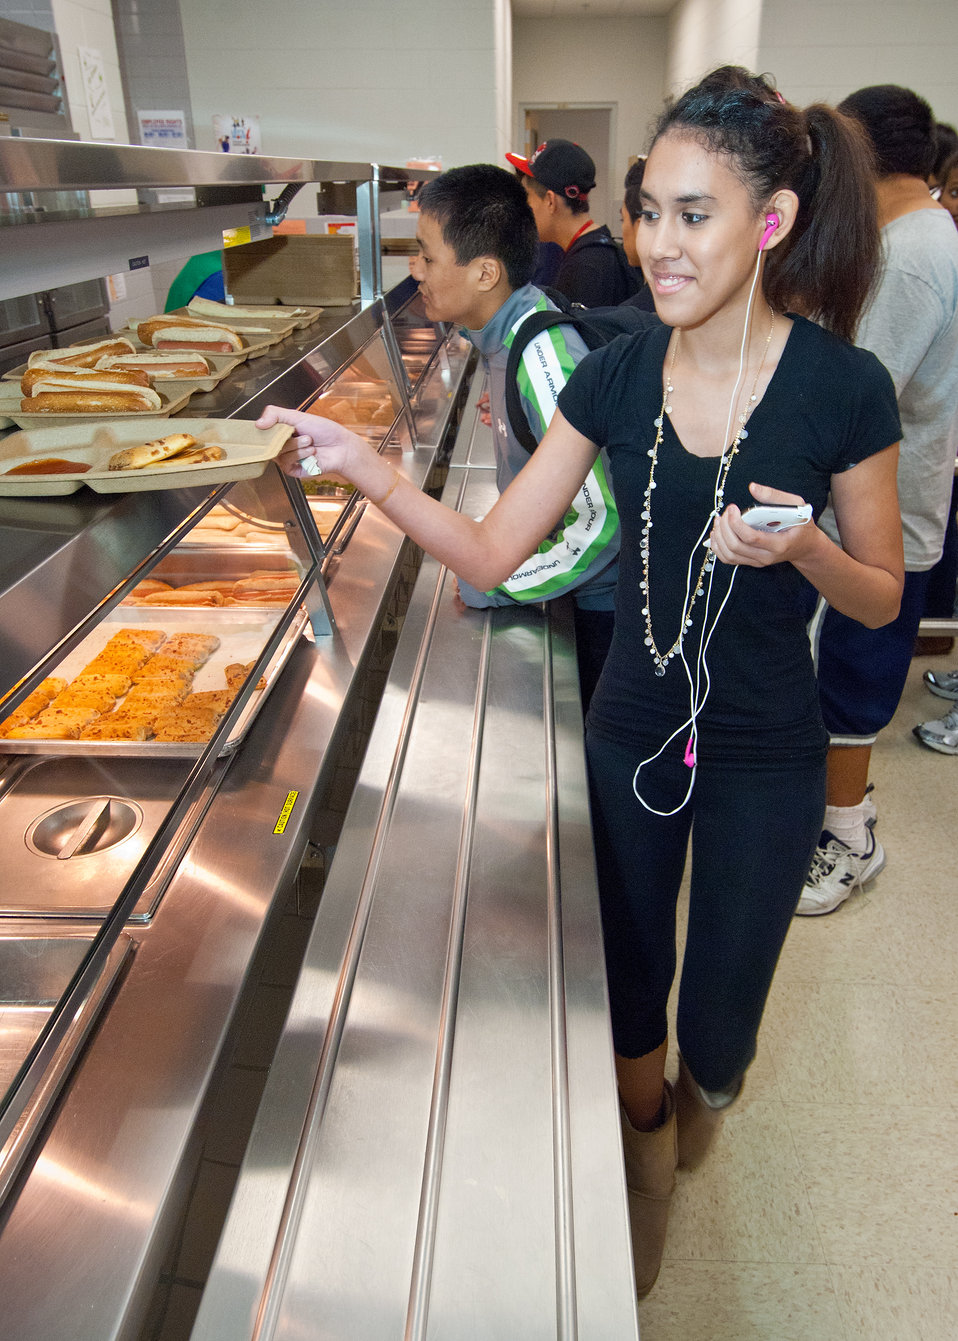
A student with the ubiquitous digital music headphones students selects her lunch at Washington-Lee High School, on Wednesday, October 19, 2011. The healthy lunch of Baja Fish Taco Wraps, Turkey Hot Dogs, Cherry Tomatoes w/dip, Baked Beans and Fresh Fruit was prepared by Arlington Public Schools, Food and Nutrition Services (FNS) for the National School Lunch Program. The National School Lunch Program is a federally assisted meal program administered by the United States Department of Agriculture, Food and Nutrition Service operating in public, nonprofit private schools and residential child care institutions. It provides nutritionally balanced, low-cost or free lunches to children each school day.